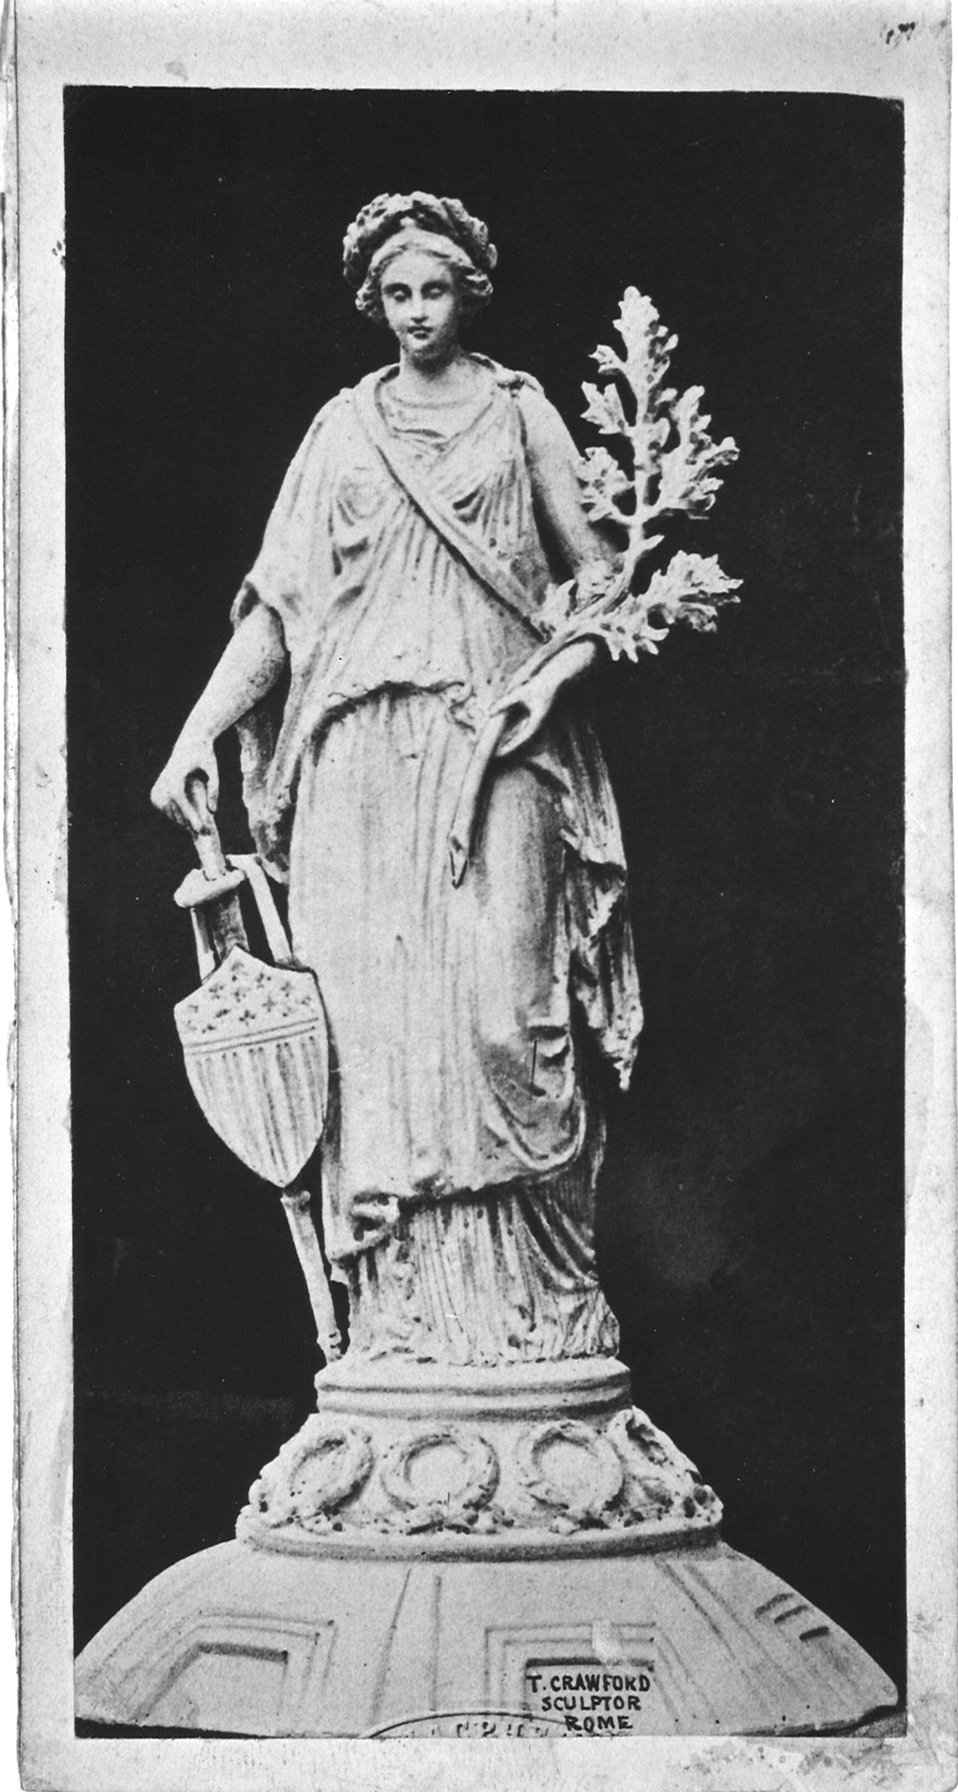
Original Design for Statue of Freedom

The original by sculptor Thomas Crawford for the Statue of Freedom was not approved.

This design featured a female figure wearing a wreath of wheat and laurel and was described by Crawford as, “Freedom triumphant—in Peace and War.”

However, when he saw the drawing for the Capitol Dome, Crawford realized that his statue needed to be taller and stand upon a more prominent pedestal.

Learn more about the design of the Statue of Freedom.